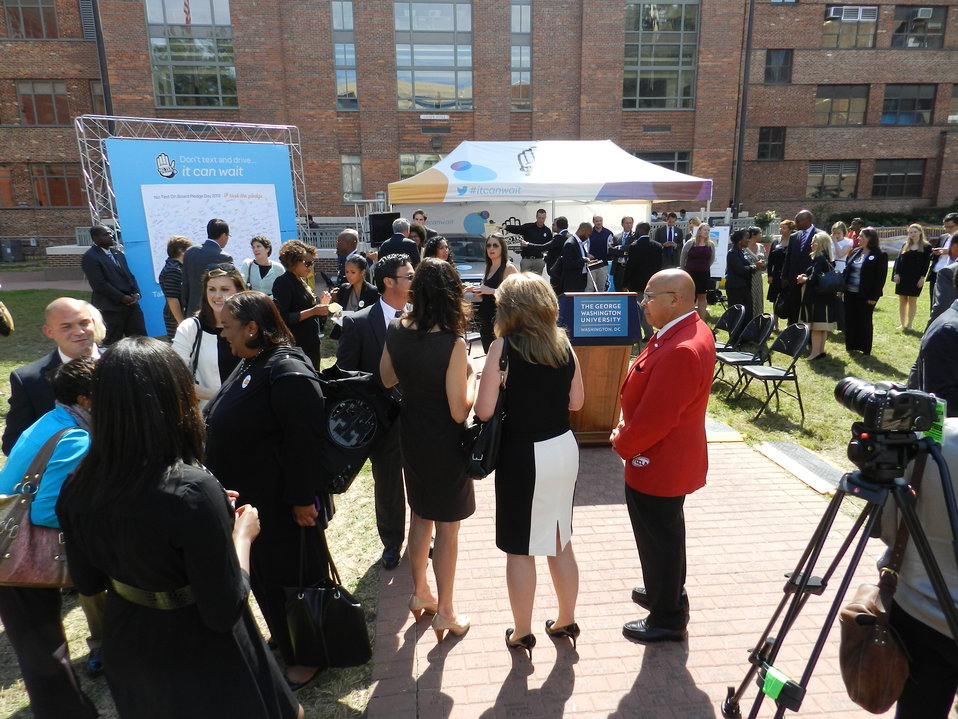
It Can Wait Pledge Day 9.19.12

‘No Text On Board’ Pledge Day Event, The George Washington University, Washington, D.C. September 19, 2012